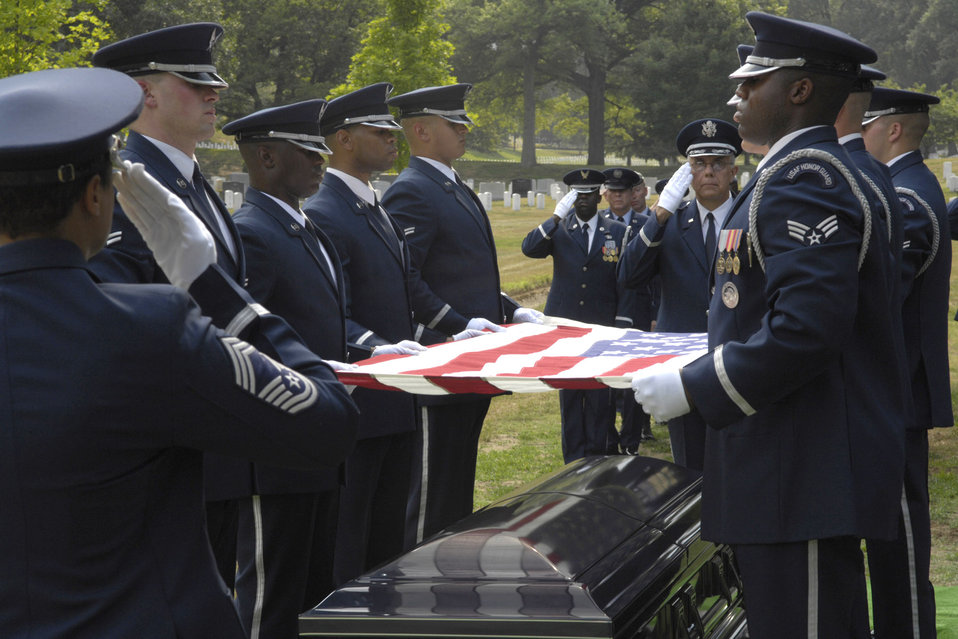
Air Force Honor Guard recruiting senior NCOs

Members of the Air Force Honor Guard render final military honors during burials at Arlington Cemetery. They also represent the Air Force at official military and state functions. Officials are seeking experienced NCOs to join the unit to mentor young Airmen serving in the Honor Guard.